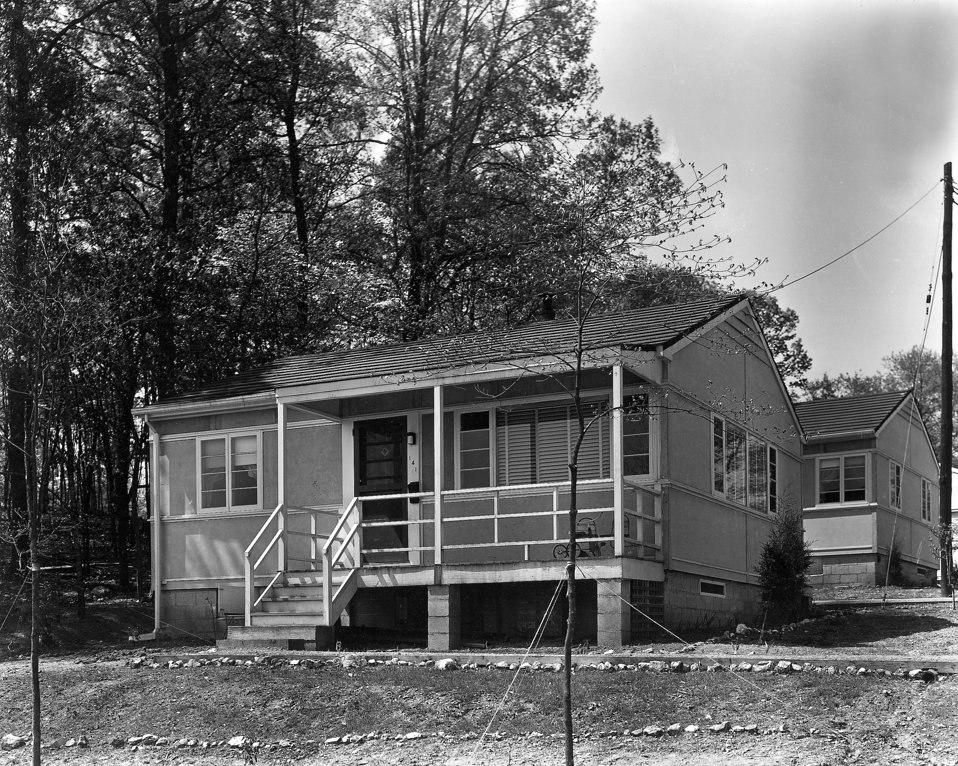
A House Cemesto Oak Ridge

MED
69 DOE Photo by Ed Westcott A House Cemesto House Oak Ridge Tennessee 1944